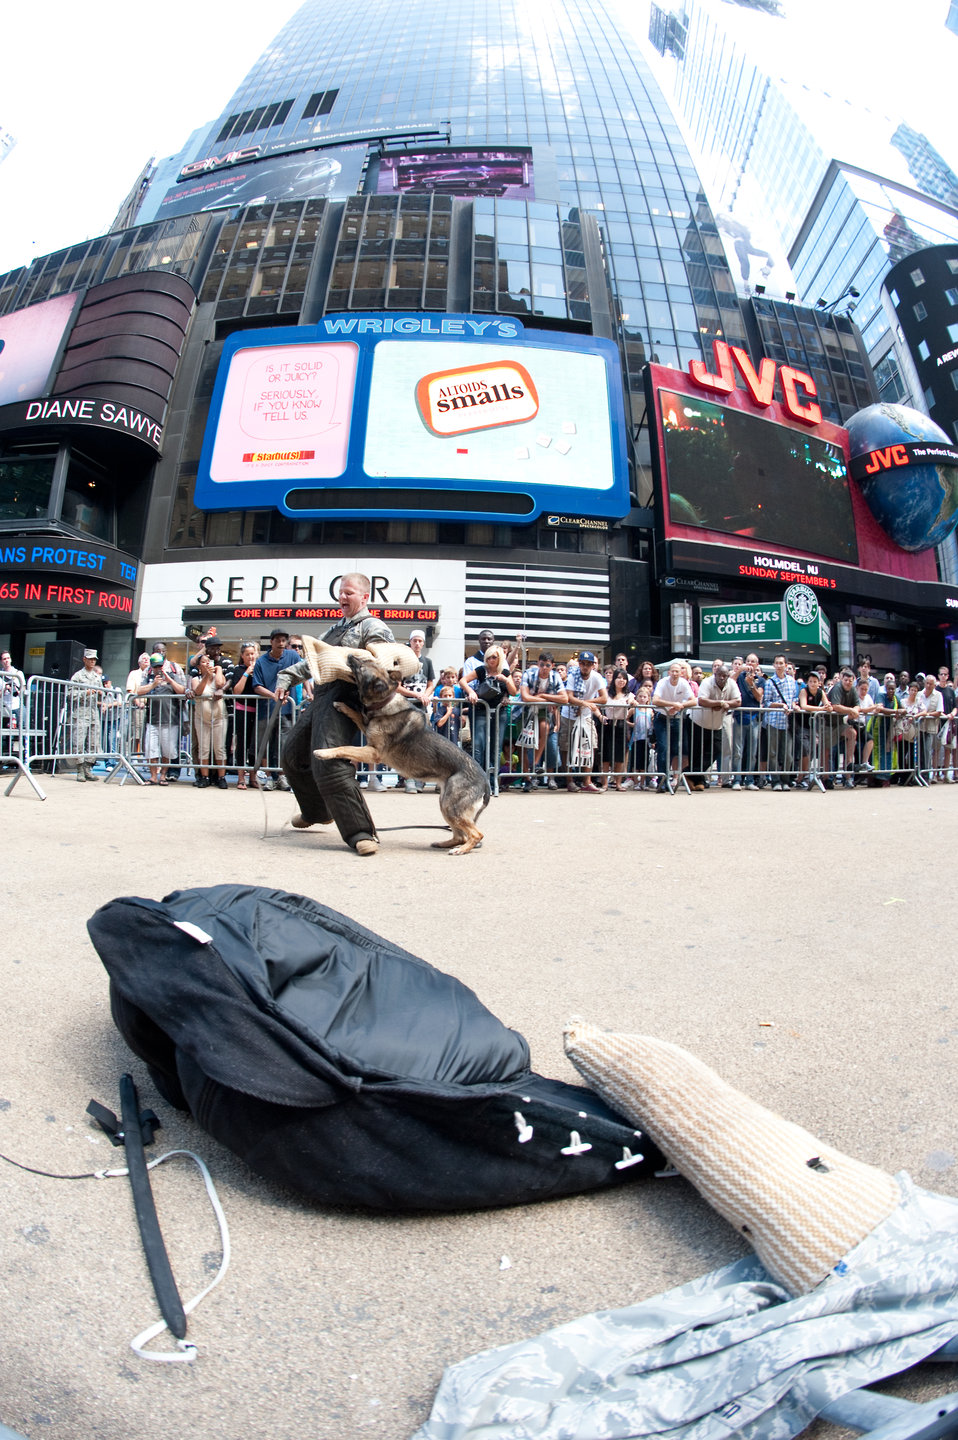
Air Force Week: Now Showing in Times Square

At a Security Forces demonstration in Times Square, military working dog Cici attacks Tech. Sgt. Tim Shaw Aug. 26, 2010, during Air Force Week New York City. Sergeant Shaw and Cici are assigned to the 87th Security Forces Squadron at Joint Base McGuire-Dix-Lakehurst, N.J.